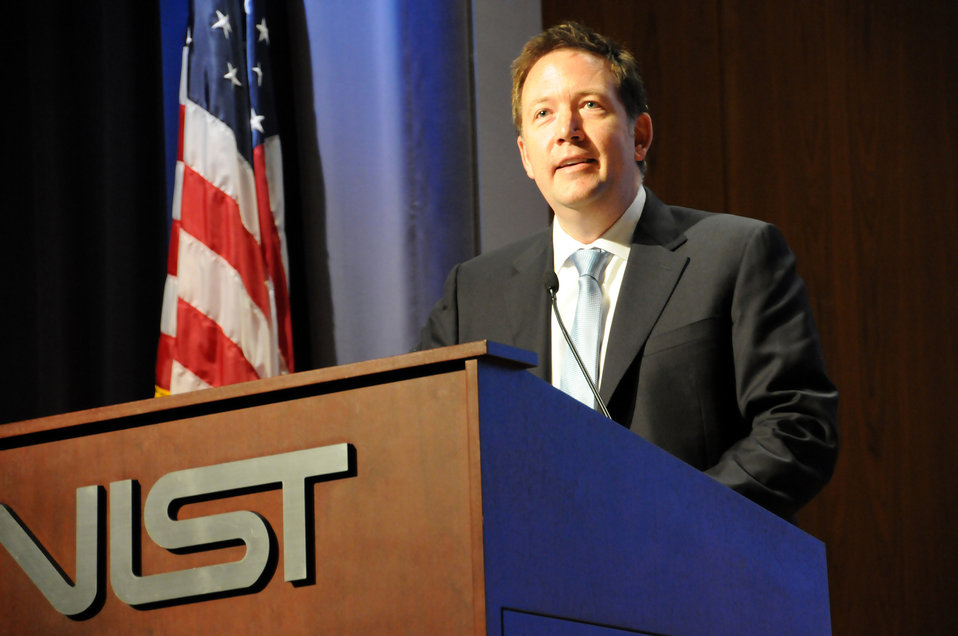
Steve VanRoekel

U.S. Chief Information Officer Steve VanRoekel addresses the Cloud Computing Forum & Workshop IV where NIST's new cloud computing technology roadmap was debuted November 2, 2011.